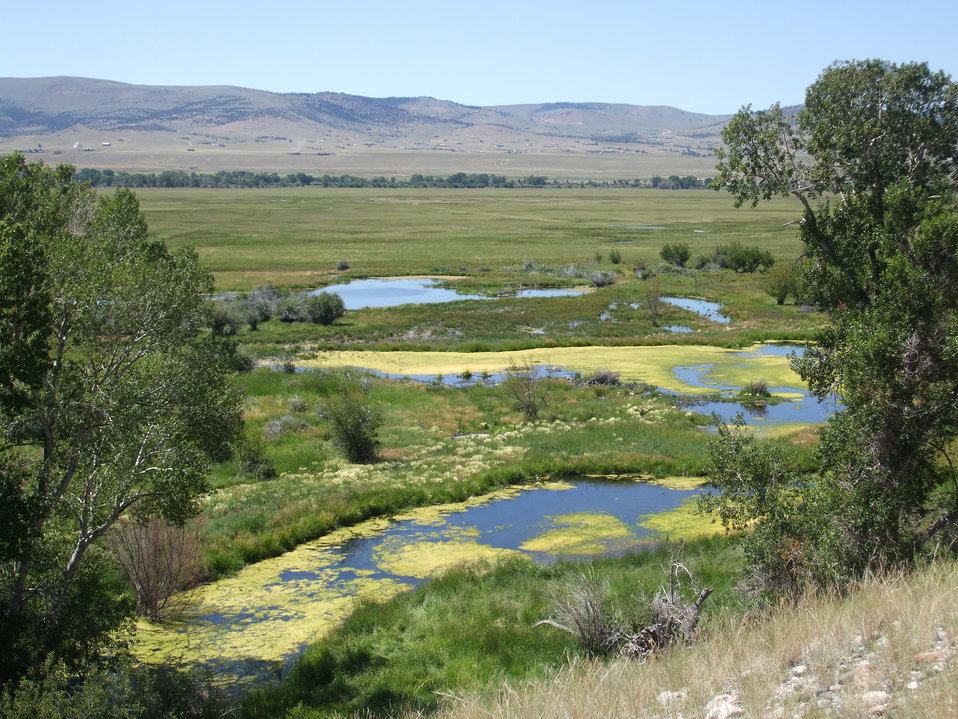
Granger1

The U.S. Department of Agriculture's (USDA) Natural Resource Conservation Service (NRCS) and other partners are working to restore the wetlands located at the headwaters of O’Dell Creek in Montana.